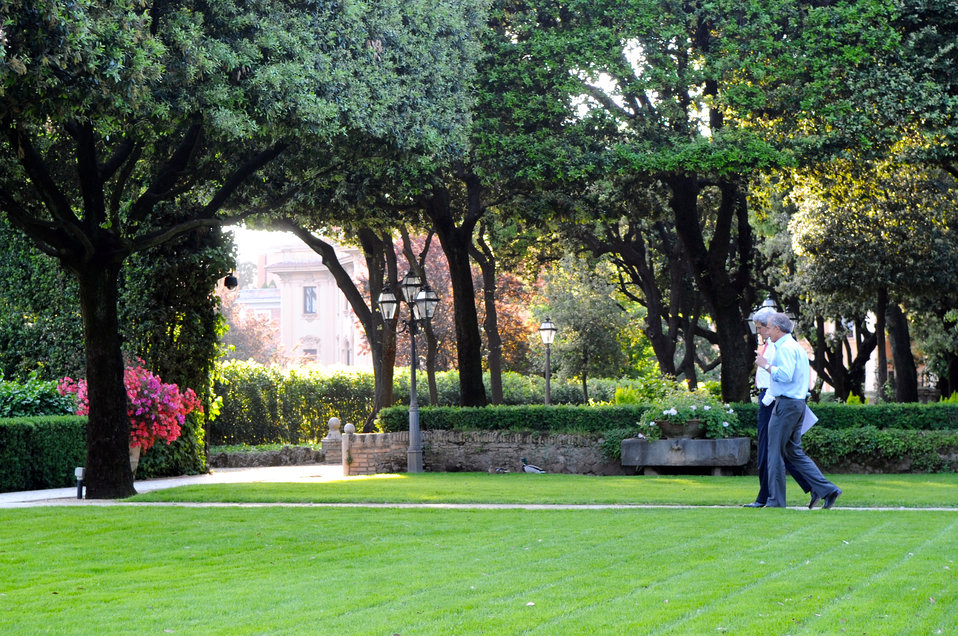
Secretary Kerry and Quartet Representative Blair Discuss Middle East Peace

U.S. Secretary of State John Kerry discusses Middle East peace with Quartet Representative Tony Blair at the Villa Taverna, the U.S. ambassador's residence in Rome, Italy, on May 9, 2013.